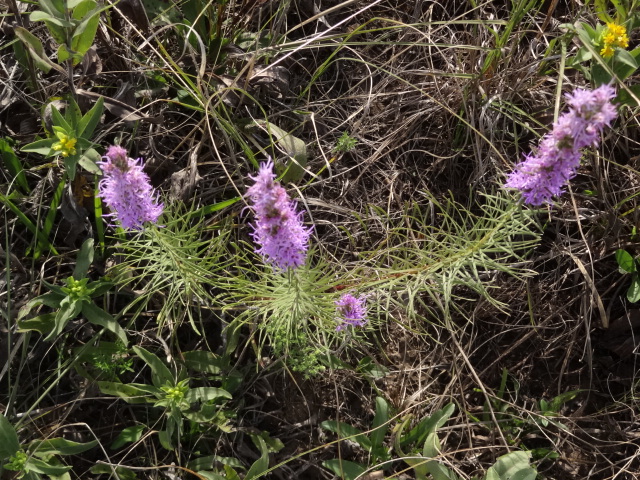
Prairie Wildflowers

Blazing star (Liatris punctata) at Marais des Cygnes National Wildlife Refuge.